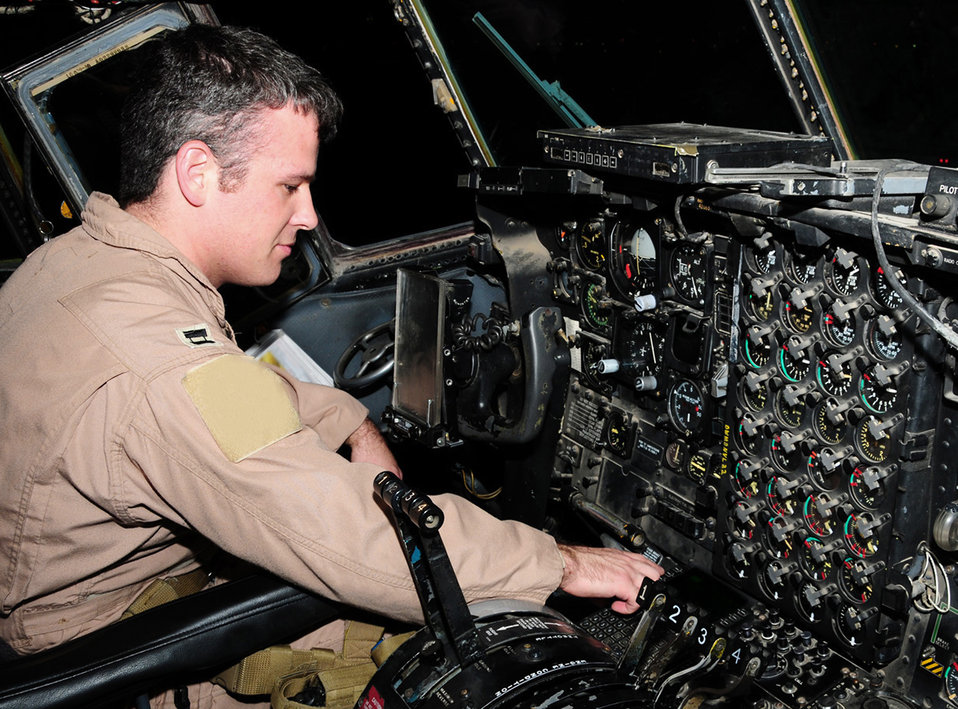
Quick recognition, action saves C-130 aircrew, Soldiers

Capt. Andrew Gillis test a navigation radio during his preflight check in a C-130 Hercules May 28 at an air base in Southwest Asia. The navigation radio is used during periods of low flight visibility. Captain Gillis is a 737th Expeditionary Airlift Squadron C-130 aircraft commander deployed from Dyess Air Force Base, Texas. He is originally from San Jose, Calif.